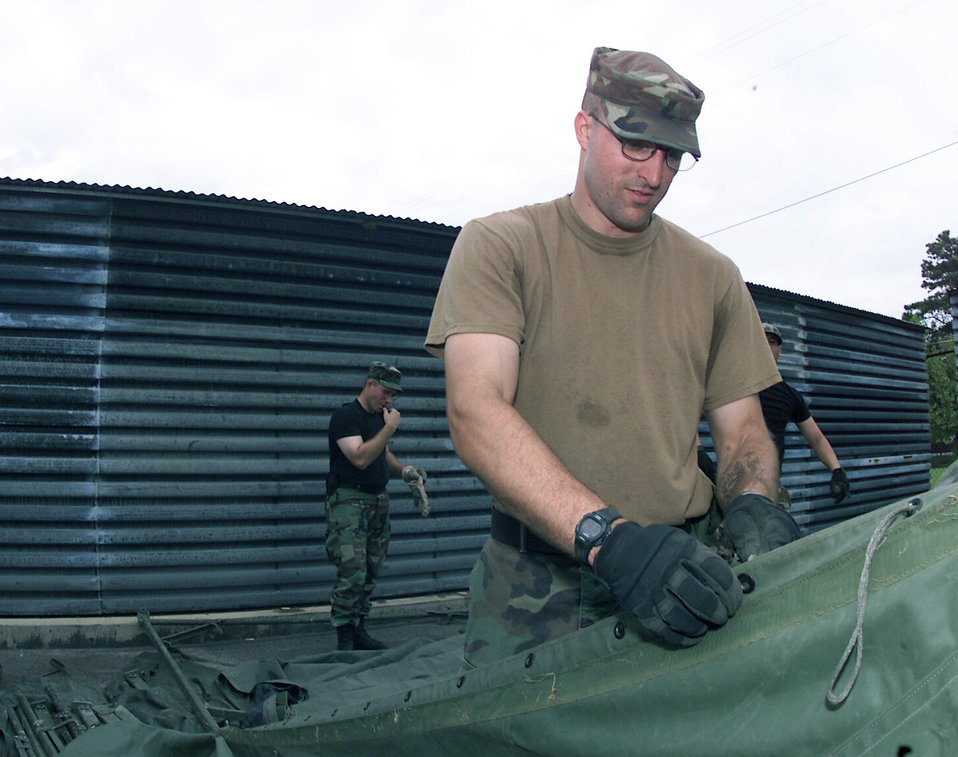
A tents situation

KWANJU AIR BASE, South Korea -- Staff Sgt. Daniel Roshio laces a tent together which will be used for communications equipment storage here. A tent city is being prepared for the arrival of the 3rd Air Expeditionary Group. Sergeant Roshio is deployed from Albany, Ga.